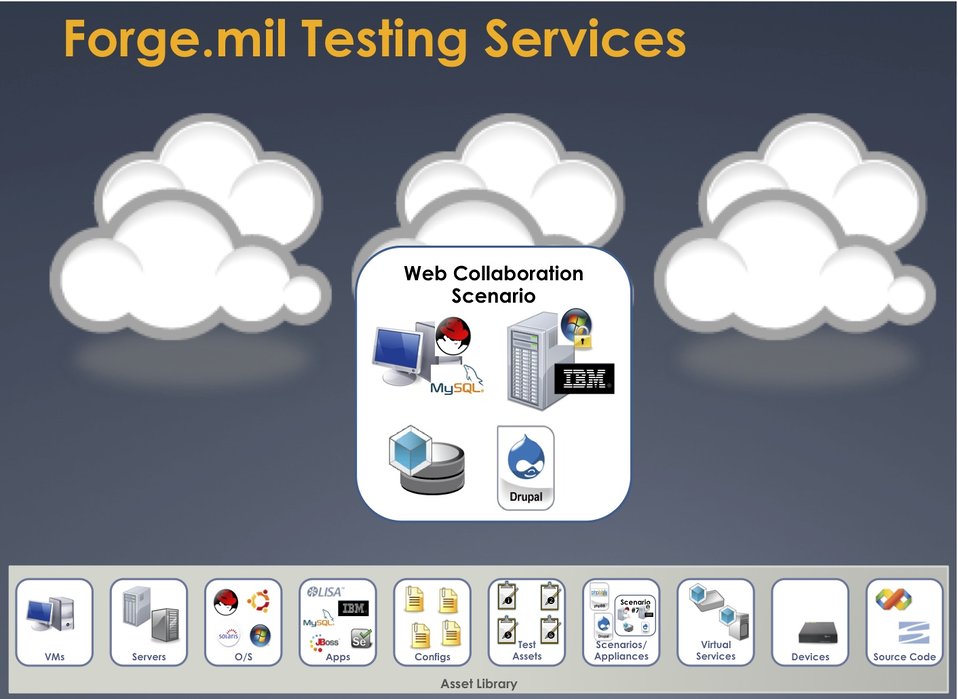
Forge.mil

A notional diagram of Forge.mil Testing Services assembling community-built assets to construct and execute test scenarios via one or more cloud computing environments. A team from the Electronic Systems Center is helping create and improve this new approach to software development and testing.